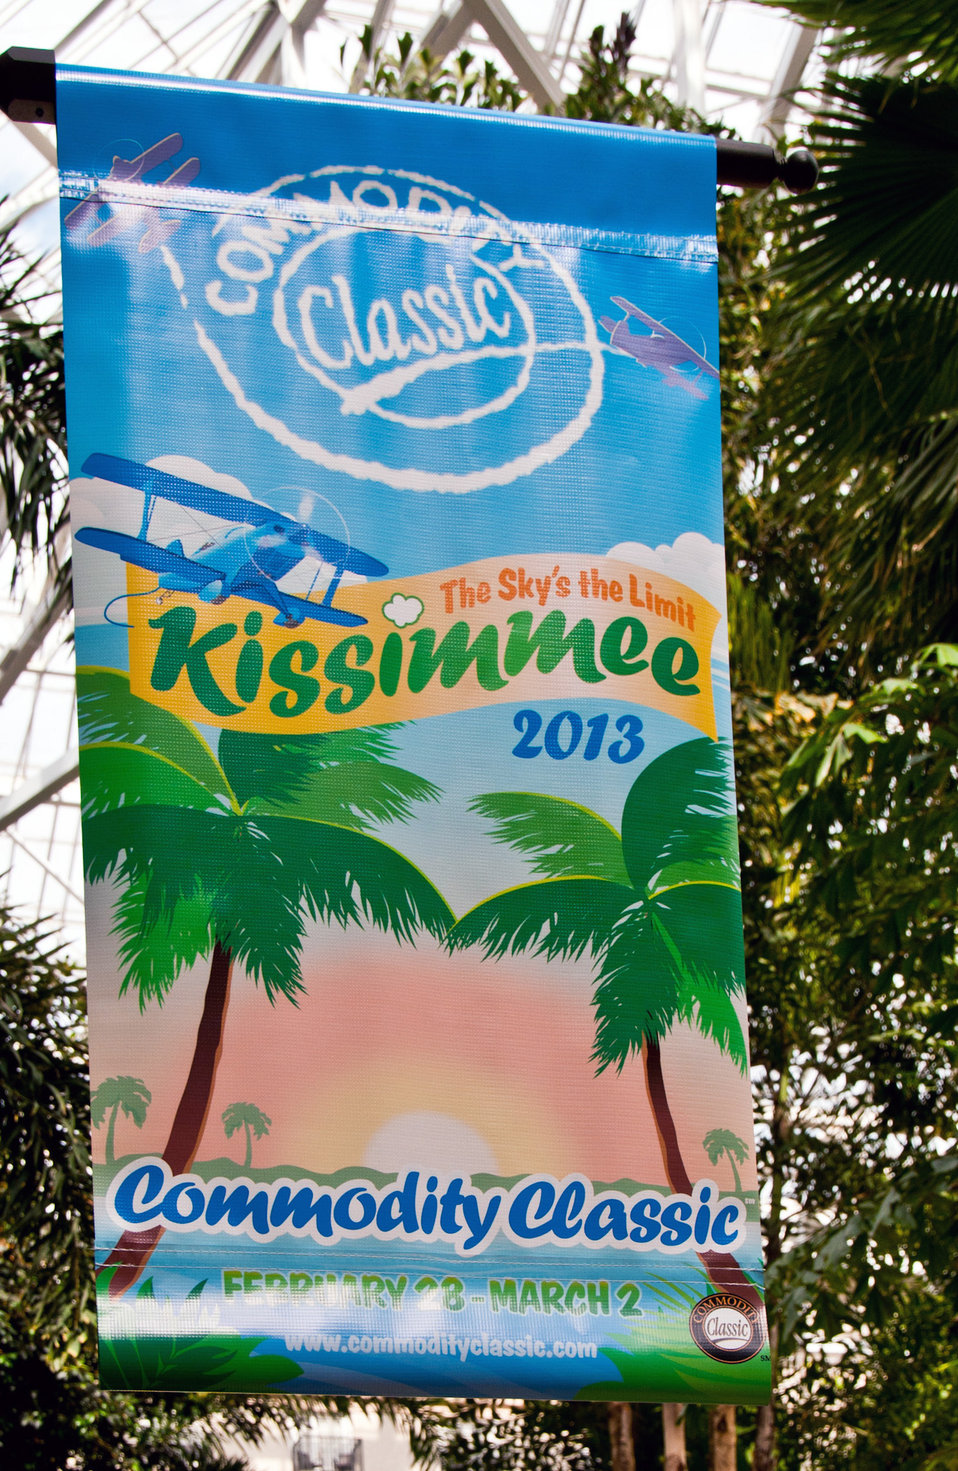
The 2013 Commodity Classic was held in Kissimmee, FL Feb. 28, 2013-Mar. 2, 2013.